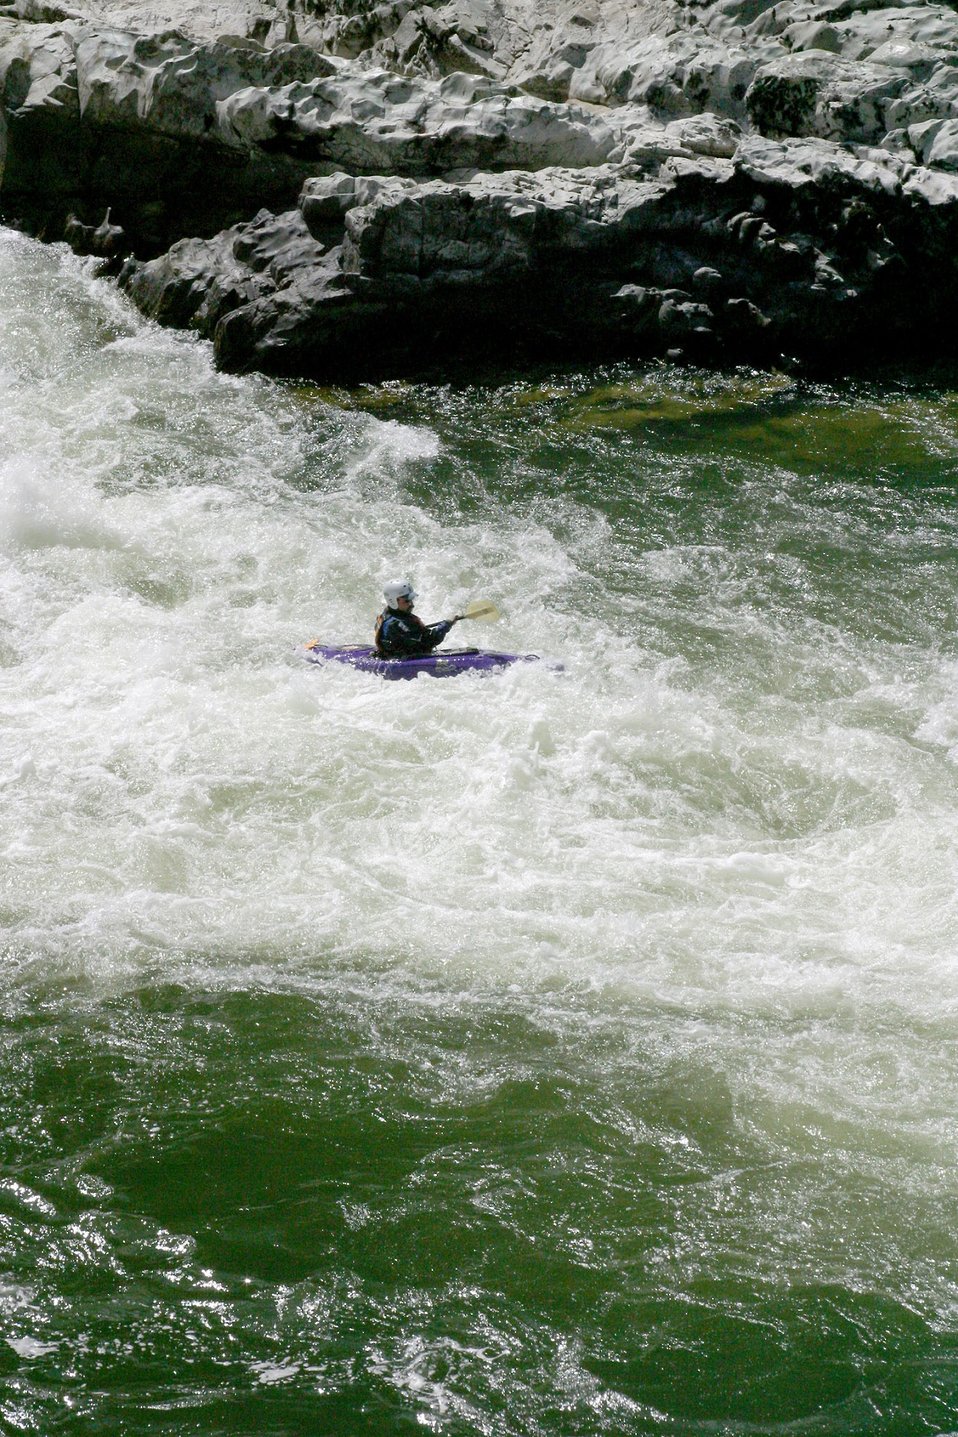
Boater at Grave Creek Falls